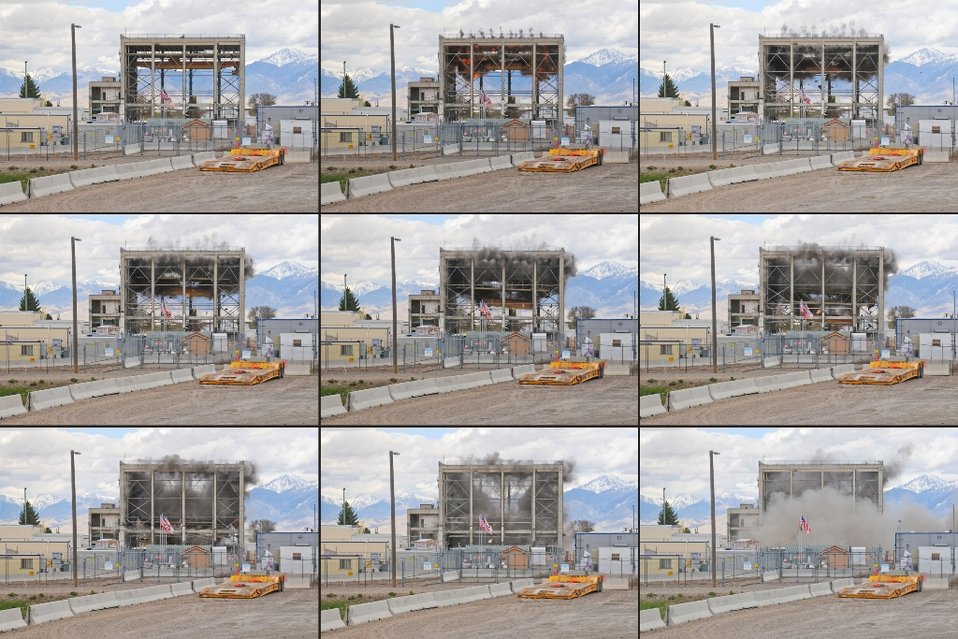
Idaho demolition

A sequential view shows the controlled explosion of the 1.2 million-pound roof of the building that once housed the historic Materials Test Reactor.